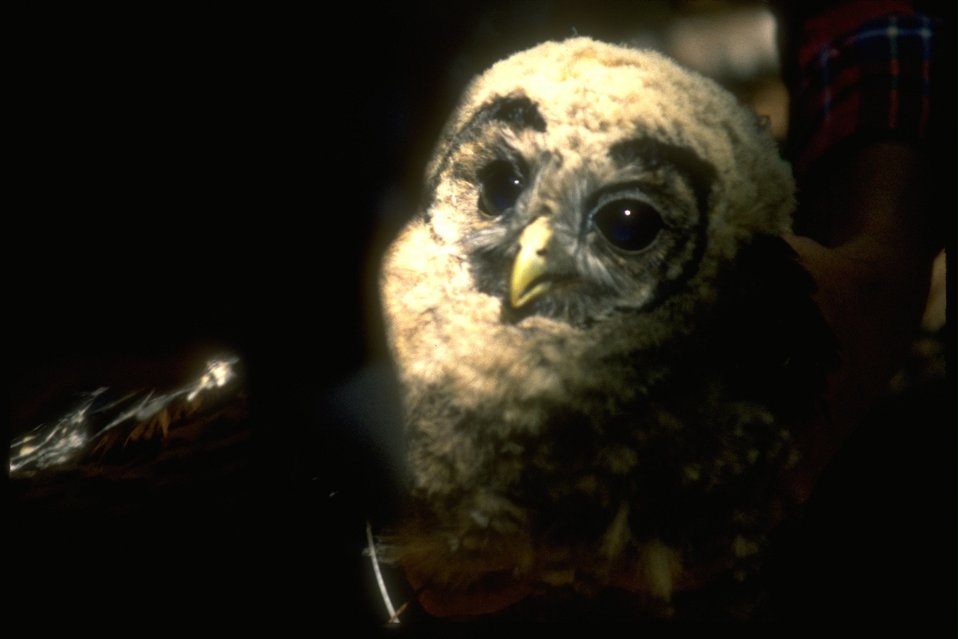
A baby (chic) Northern Spotted Owl.